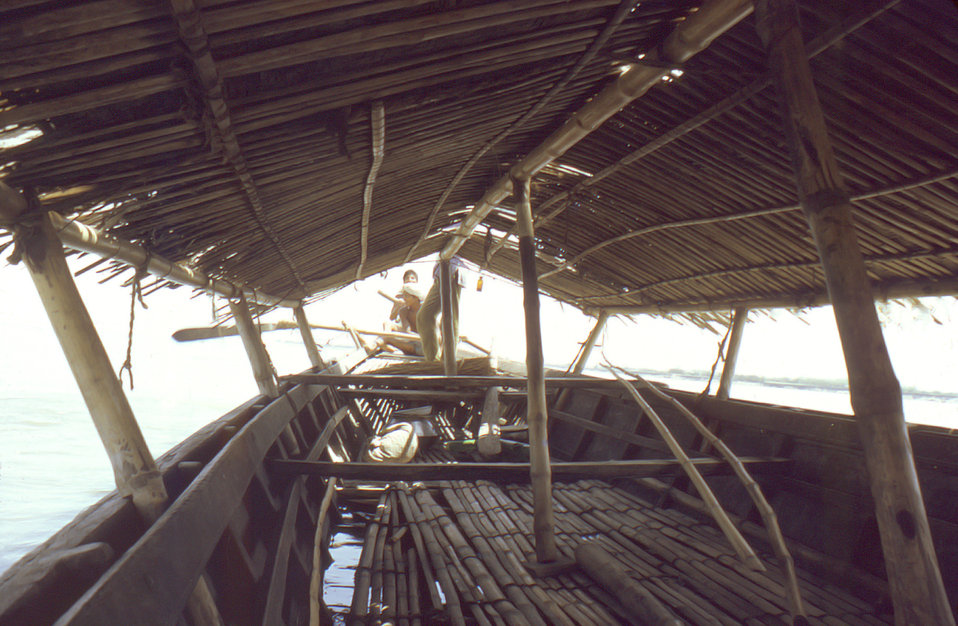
This 1974 photograph was captured aboard a Bangladesh watercraft, which is common to that country still today, as a common means of transport. This was one of the modes of transport used by the smallpox eradication team during their successful efforts to eradicate this dreaded disease throughout the world.